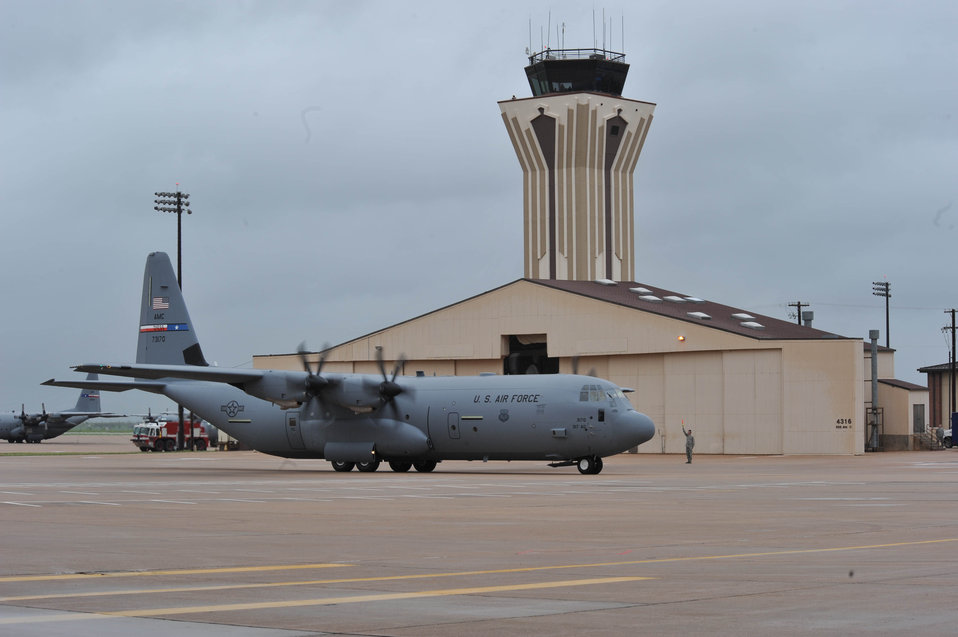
Super Herc

Air Force Chief of Staff Gen. Norton Schwartz delivered this new C-130J Super Hercules April 16, 2010, to Dyess Air Force Base, Texas. This was the first of 28 C-130Js to be delivered to the 317th Airlift Group.